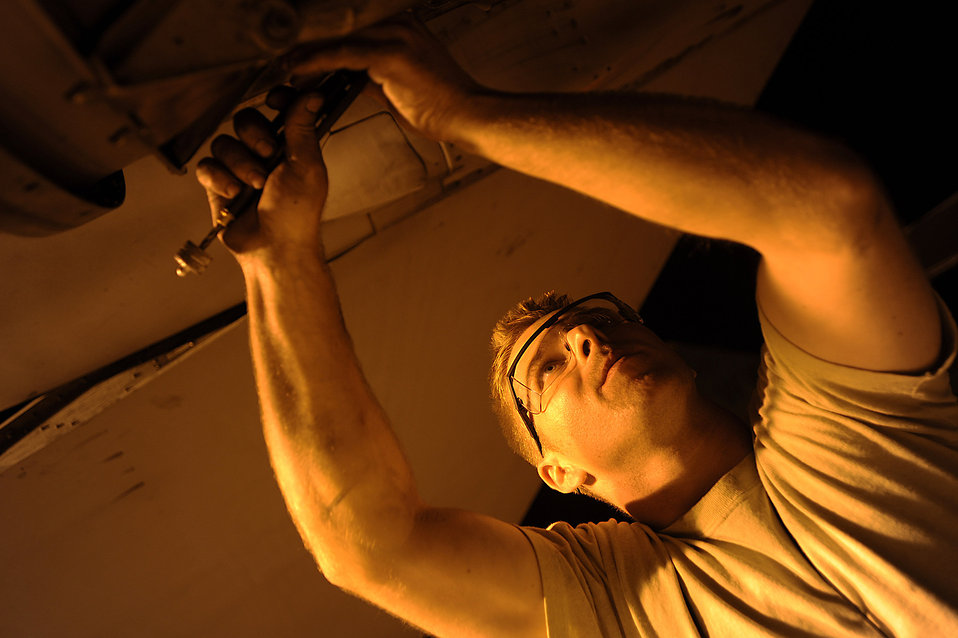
Burning midnight oil

Staff Sgt. Danny Shaw installs safety wiring around a bolt on an F-16 Fighting Falcon Oct. 6 during some late-night maintenance at Joint Base Balad, Iraq. Installing safety wire prevents parts of the aircraft from vibrating off. Sergeant Shaw, an aerospace propulsion journeyman with the 332nd Expeditionary Aircraft Maintenance Squadron, is deployed from Misawa Air Base, Japan. His hometown is Glasgow, Ky.